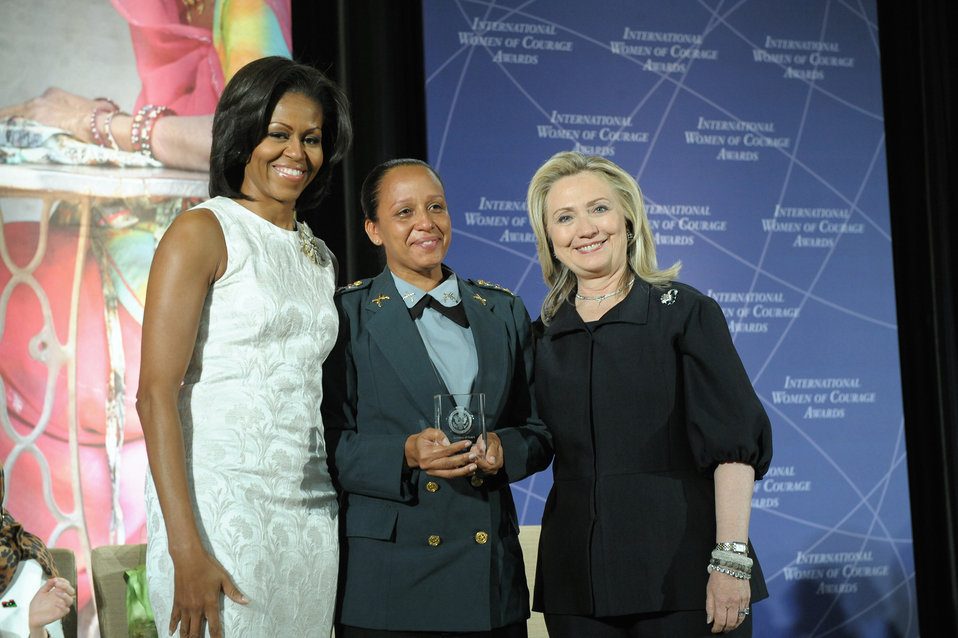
Secretary Clinton and First Lady Obama With 2012 IWOC Award Winner Maj. Pricilla de Oliveira Azevedo of Brazil

U.S. Secretary of State Hillary Rodham Clinton, right; and First Lady Michelle Obama, left; pose for a photo with 2012 International Women of Courage (IWOC) Award Winner Maj. Pricilla de Oliveira Azevedo of Brazil, at the U.S. Department of State in Washington, D.C., on March 8, 2012.